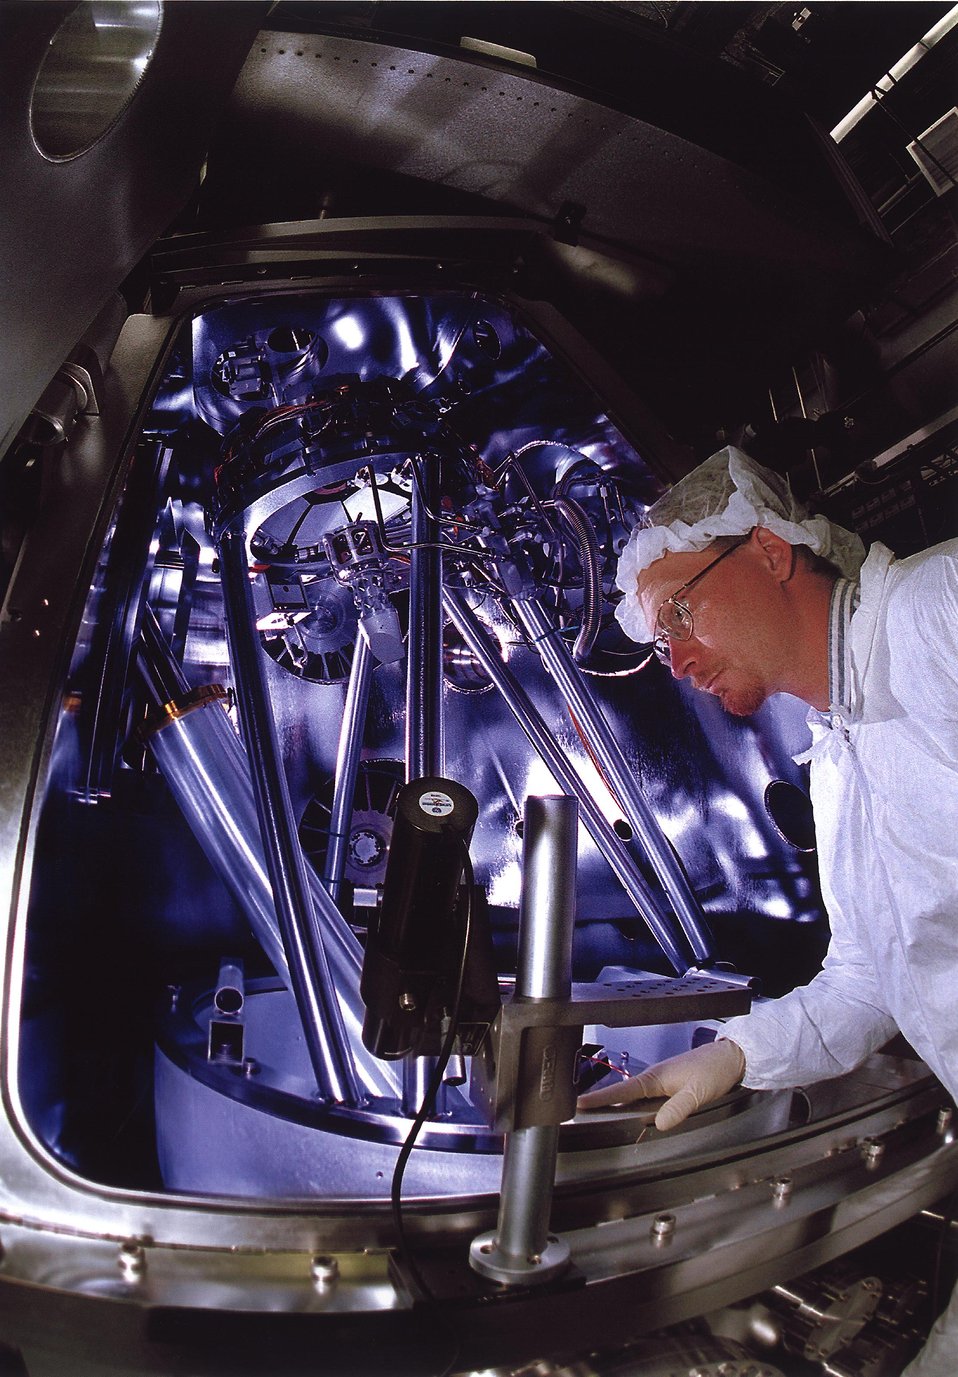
SANDIA RESEARCHER WORKING AT THE INDUSTRY SPONSORED VIRTUAL NATIONAL LABORATORY.

THE VIRTUAL NATIONAL LABORATORY LINKS THREE DOE LABS, SANDIA, LAWRENCE LIVERMORE AND LAWRENCE BERKELEY. THE PROGRAM IS A PARTNERSHIP TO DEVELOP EXTREME ULTRAVIOLET LITHOGRAPHY (EUVL) AT SANDIA INTO NEXT GENERATION TECHNIQUES FOR MAKING COMPUTER CHIPS THAT CAN BE 100 TIMES FASTER WITH 1000 TIMES MORE MEMORY. THE WORK IS BACKED BY INDUSTRIAL LEADERS IN MICROELECTRONICS LED BY COMPANIES SUCH AS INTEL, MOTOROLA AND AMD.